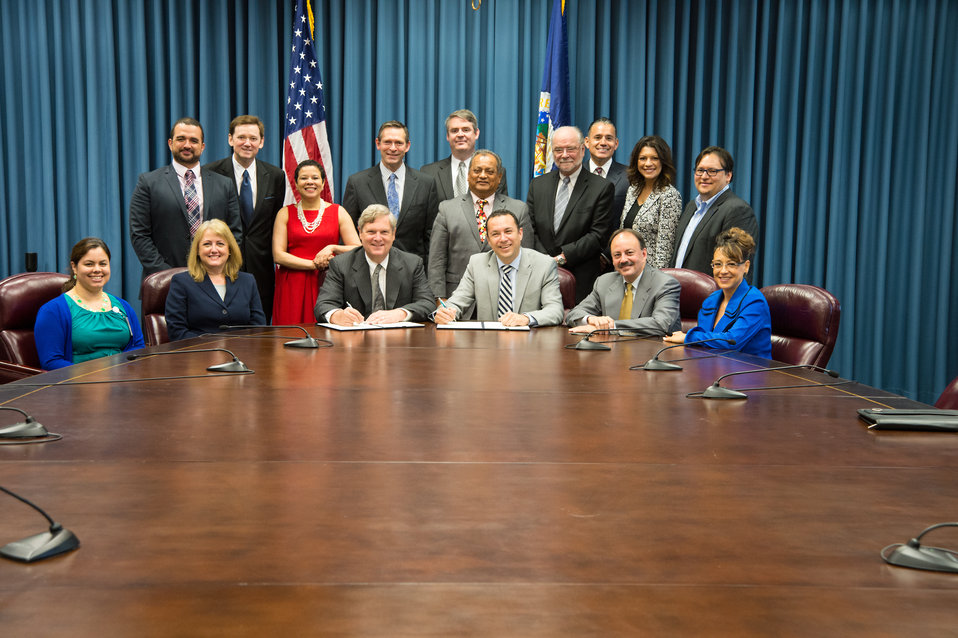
Agriculture Secretary Tom Vilsack and National Hispanic Leadership Agreement and Labor Council Executive Director Hector Sanchez pose with employees of the U.S. Department of Agriculture (USDA) and National Hispanic Leadership Agreement and Labor Council after signing a Memorandum of Understanding (MOU) strengthening USDA’s commitment to Hispanic employment and immigration reform at USDA in Washington, D.C. on Thursday, May 22, 2014.